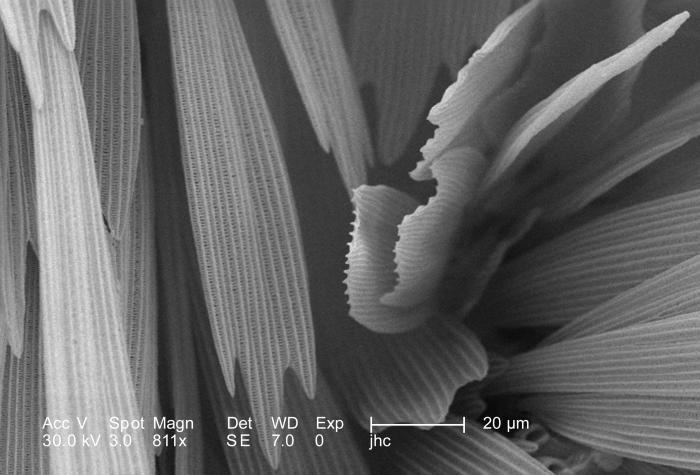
In this scanning electron micrographic (SEM) view of an unidentified white moth's exoskeletal surface, under a relatively low magnification of 811X, some of the ultrastructural details found in the construct of its scales was revealed. This moth, discovered deceased in the Decatur, Georgia suburbs, was a member of the Phylum Arthropoda, Order Lepidoptera. At this level of magnification the diaphanous structure of these adnexae could be appreciated, bringing to life the incredible microscopic beauty, which goes unseen, but is abundant all around us. For another, highly magnified view revealing the proximal end of a single scale, as it inserted into the exoskeletal surface, see PHIL 9841.